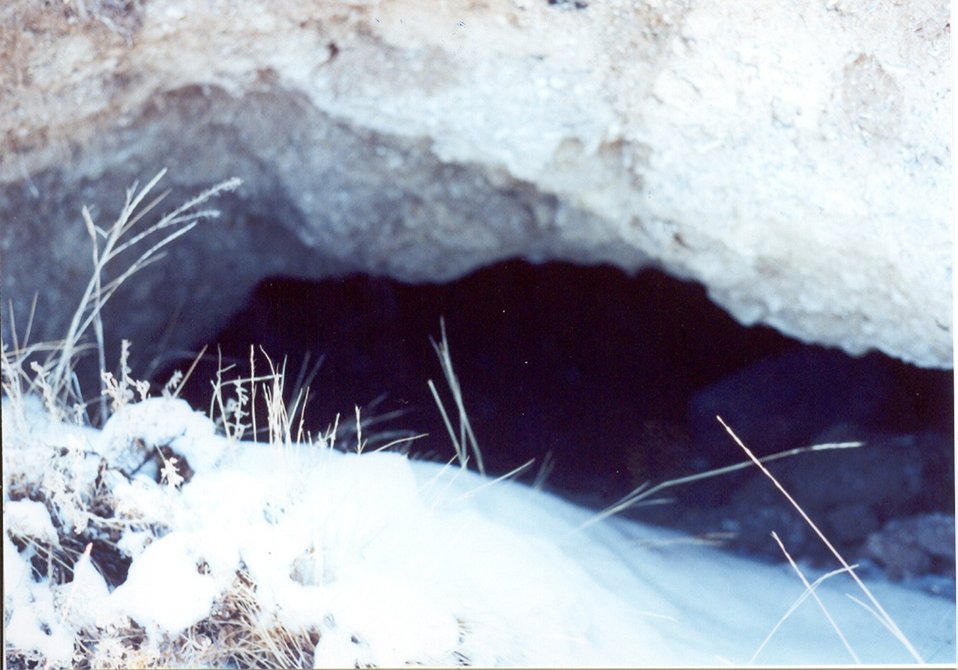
Abandoned Mine adit Salmon Field Office Upper Columbia Salmon Clearwater District UCSC